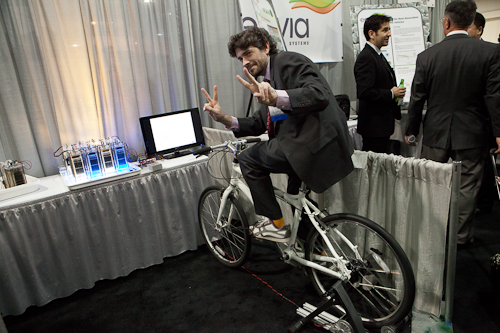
Biking for Batteries

CUNY's Josh Galloway demonstrates how the bike is able to charge their flow-assisted alkaline battery. The CUNY Energy Institute aims to demonstrate a better cycle life than lithium-ion batteries, which can be up to 20 times more expensive than Zinc-based batteries.